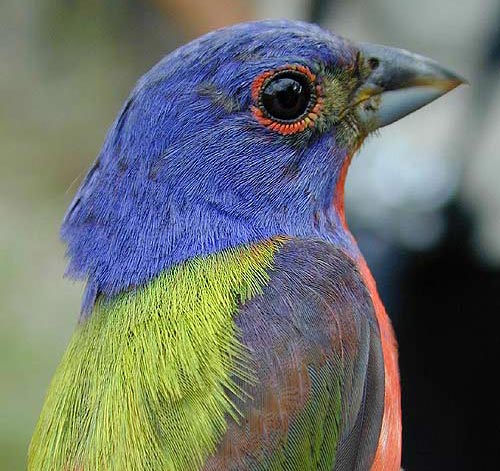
painted bunting